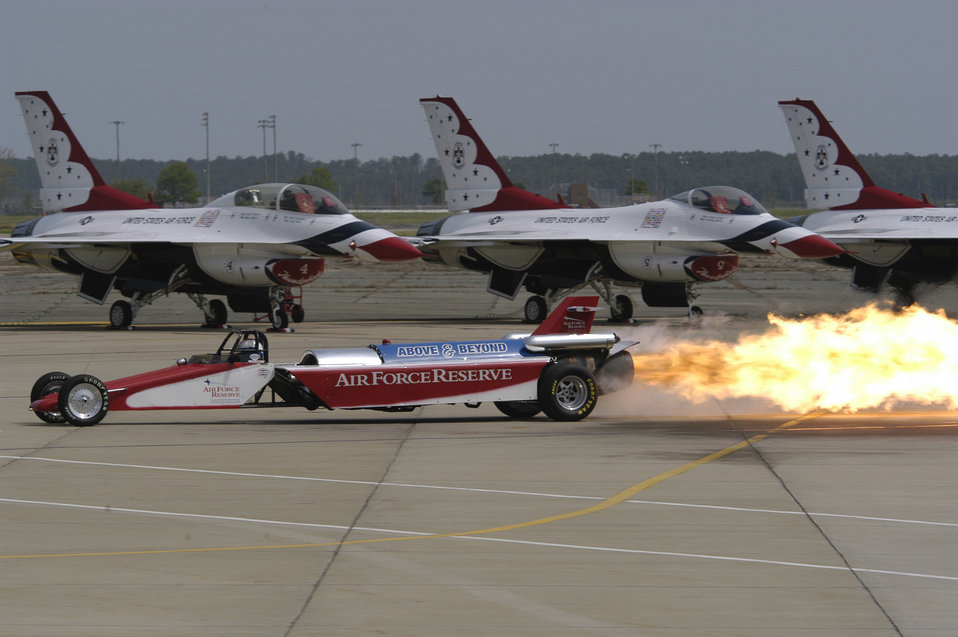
Jet powered

LANGLEY AIR FORCE BASE, Va. -- The Air Force Reserve "Above and Beyond Jet Car," powered by a 10,000 horsepower Westinghouse J-34 jet engine from a T-2C Buckeye aircraft, lights its afterburner in front of F-16C Fighting Falcons at the 2005 Air Power over Hampton Roads Air Show here May 14.